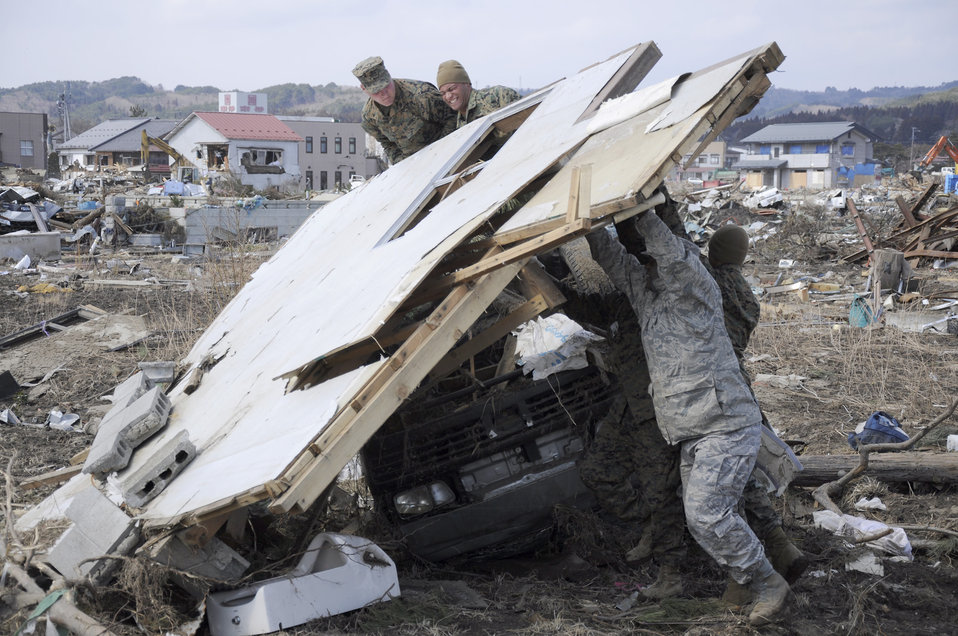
Airmen help with tsunami cleanup

Service members lift a knocked-down wall off a damaged car March 29, 2011, in Noda Mura, Japan.